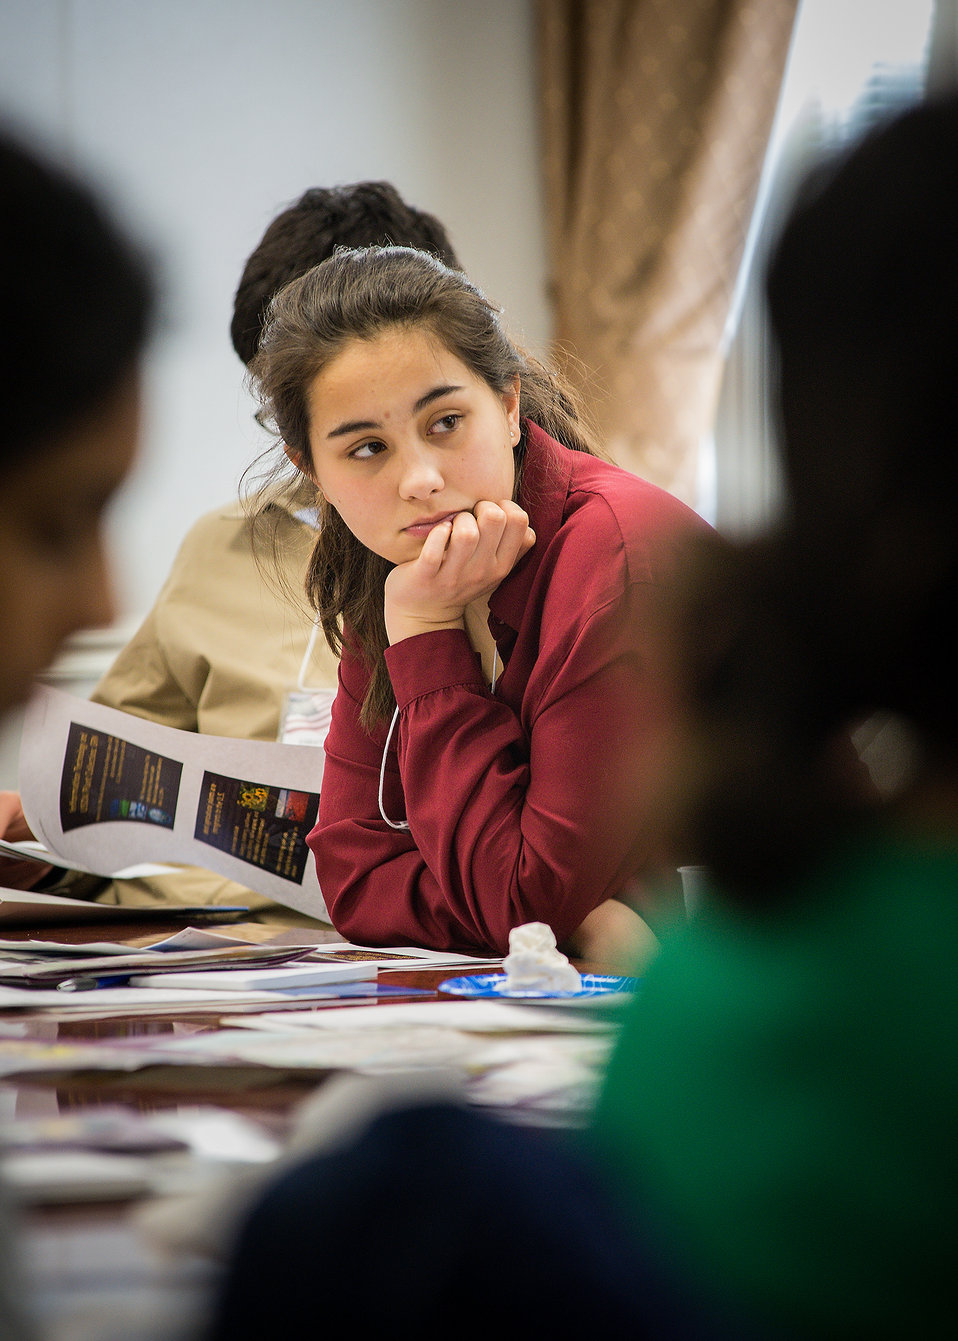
Shani Cave, a student from Thomas Jefferson High School of Science and Technology in Alexandria, VA. listens to a speaker during the U.S. Department of Agriculture (USDA), Office of the Chief Information Officer (OCIO) IT Job Shadow Day, Tuesday, Mar. 25, 2014. The OCIO IT Job Shadow Day hosts students from local high schools in the Washington, D.C. area annually with IT professionals and agricultural specialists from a variety of mission areas at USDA.